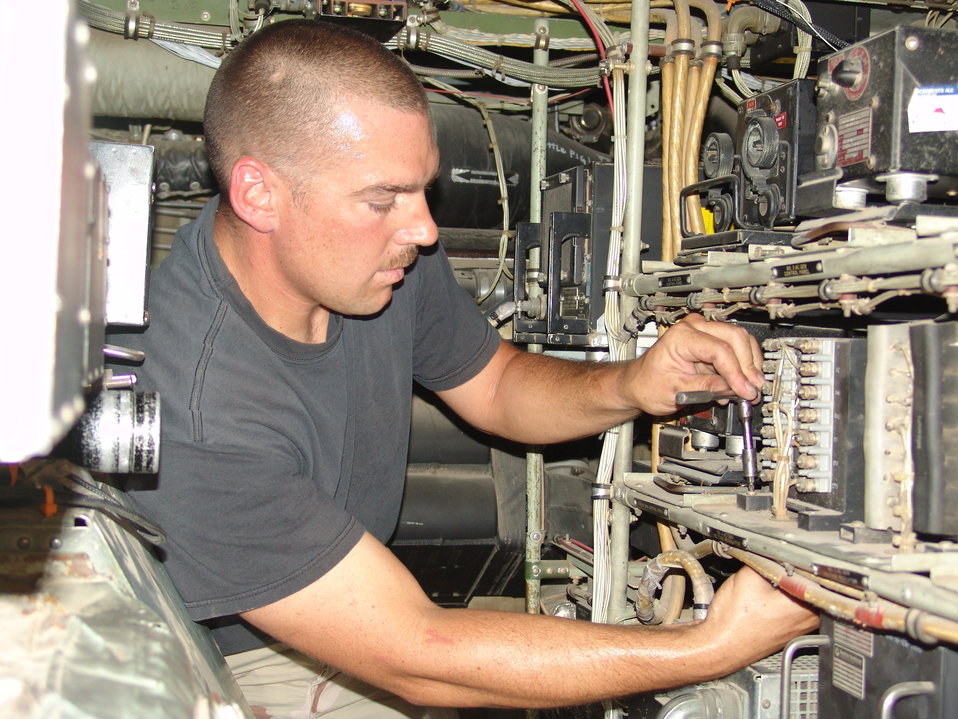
Getting regulated

SOUTHWEST ASIA -- Tech. Sgt. Dave Hainley installs a voltage regulator inside the underdeck array of an EC-130H Compass Call at a forward-deployed location. He is an aircraft electrical and environmental systems specialist with the 43rd Expeditionary Electronic Combat Squadron and is from Davis-Monthan Air Force Base, Ariz.